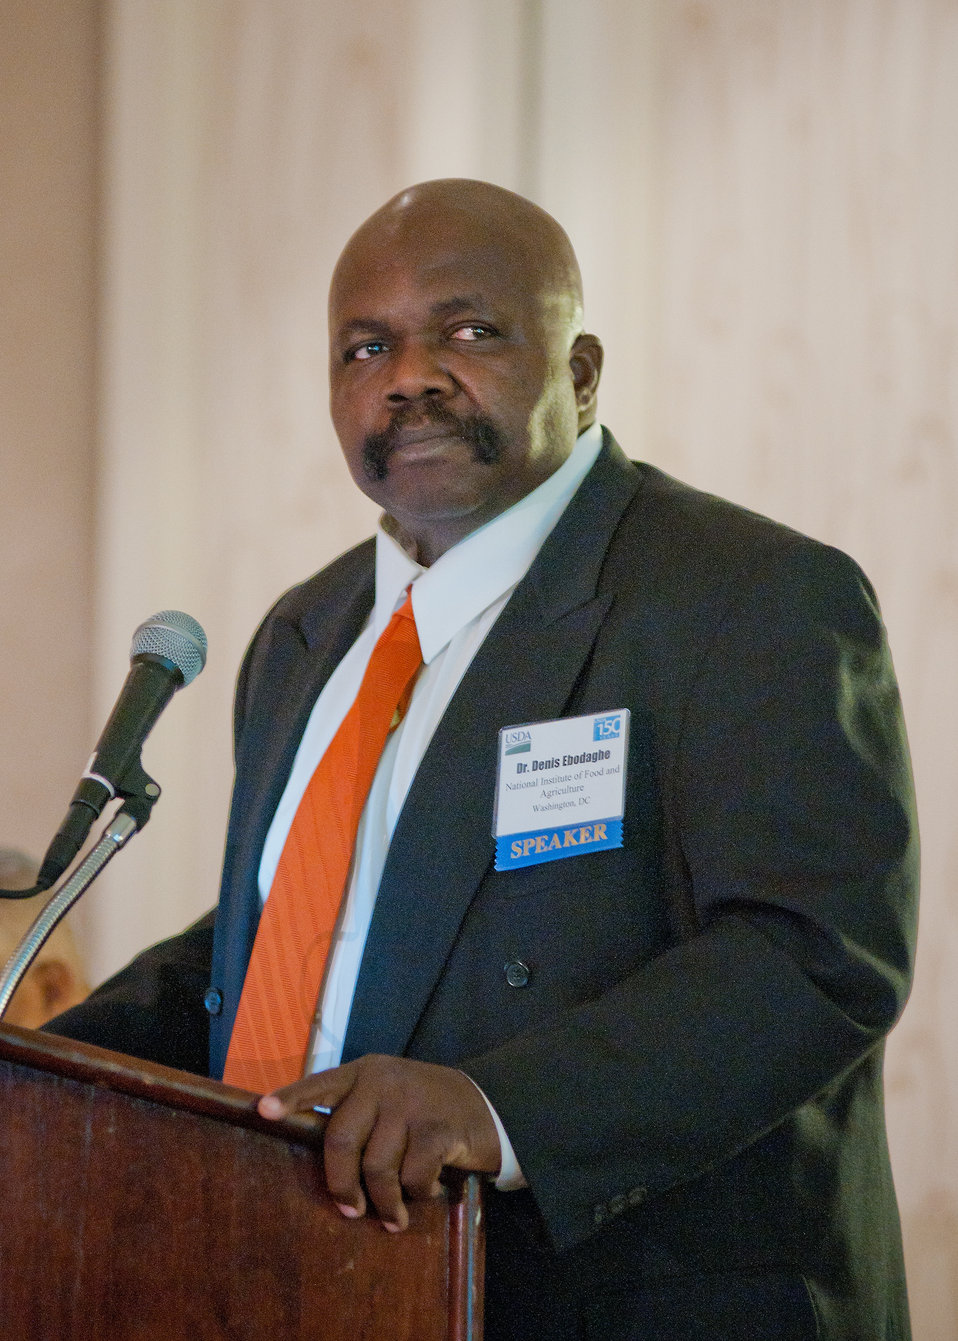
Dennis Ebodaghe, National Program Leader/Small Farms Program, United States Department of Agriculture, National Institute of Food and Agriculture Washington, D.C., spoke during the breakout session Innovative Solutions for Meeting the Challenges of Small and Disadvantaged Farmers at the 2012 Agricultural Outlook Forum, “Moving Agriculture Forward, Growing, Innovating and Celebrating 150 Years” held at the Crystal gateway Marriott Hotel Arlington, Virginia, Friday, February 24, 2012. Ebodaghe described the role of the evolving land grant system in helping to meet the needs of specific stakeholders.